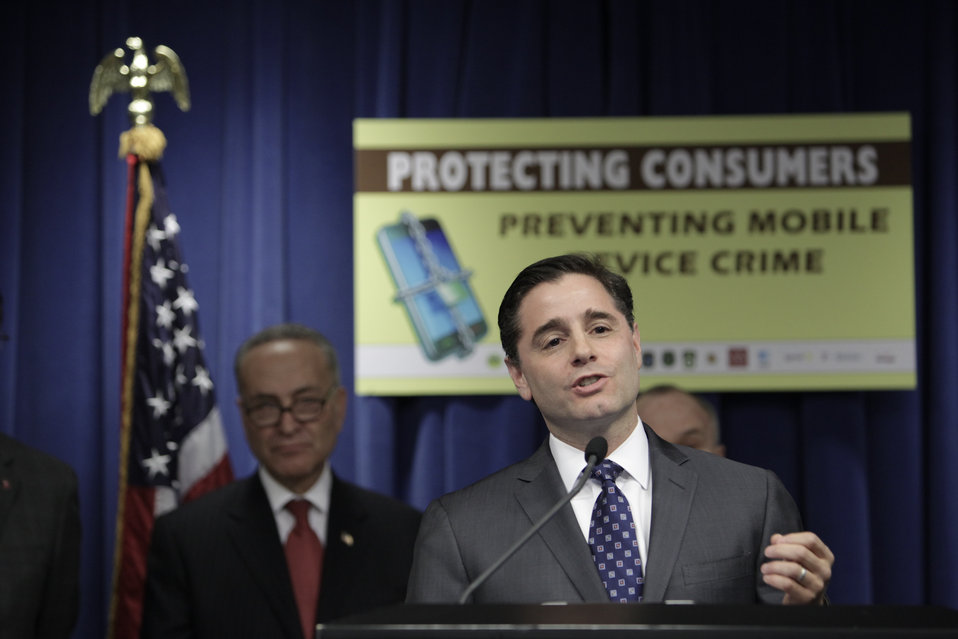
FCC Chairman Genachowski speaks about consumer protection against theft of data and smartphones at the John A. Wilson Building in Washington, DC on April 10, 2012.